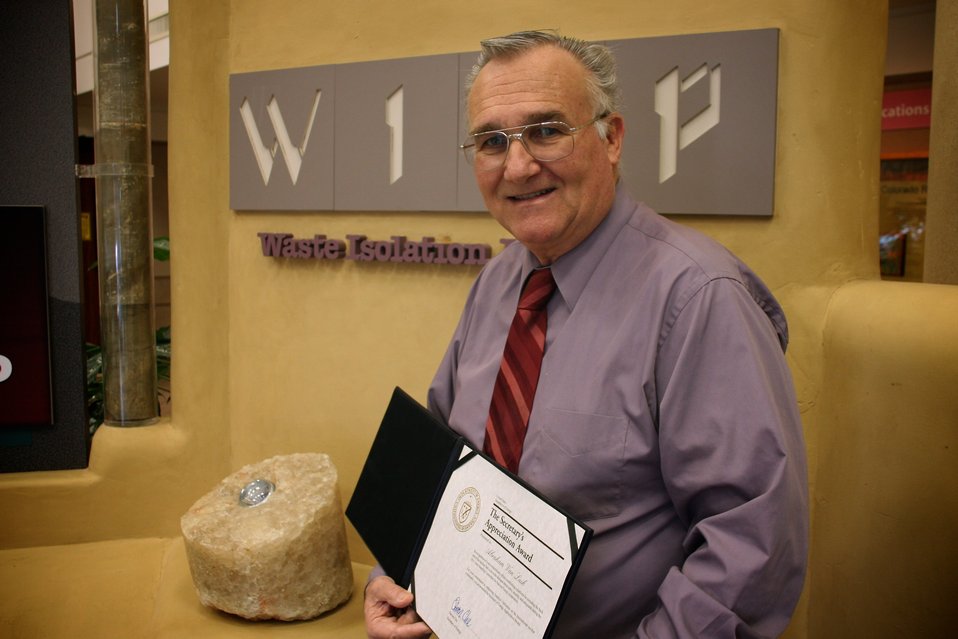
Carlsbad Field Office International Programs Manager Dr. Abraham Van Luik.

Van Luik received the Secretary of Energy Appreciation Award. He worked with officials from the Department of State Office of Nuclear Energy, Safety and Security, the National Nuclear Safety Administration, the Nuclear Regulatory Commission and a high-level delegation of nuclear officials from Argentina to co-host the 8th meeting of the U.S.-Argentine Joint Standing Committee on Nuclear Energy Cooperation (JSNEC) in Carlsbad, N.M. in July 2011.

As part of the conference, JSNEC members held bilateral talks on international security, nonproliferation policies, technical collaboration, nuclear power and waste management.